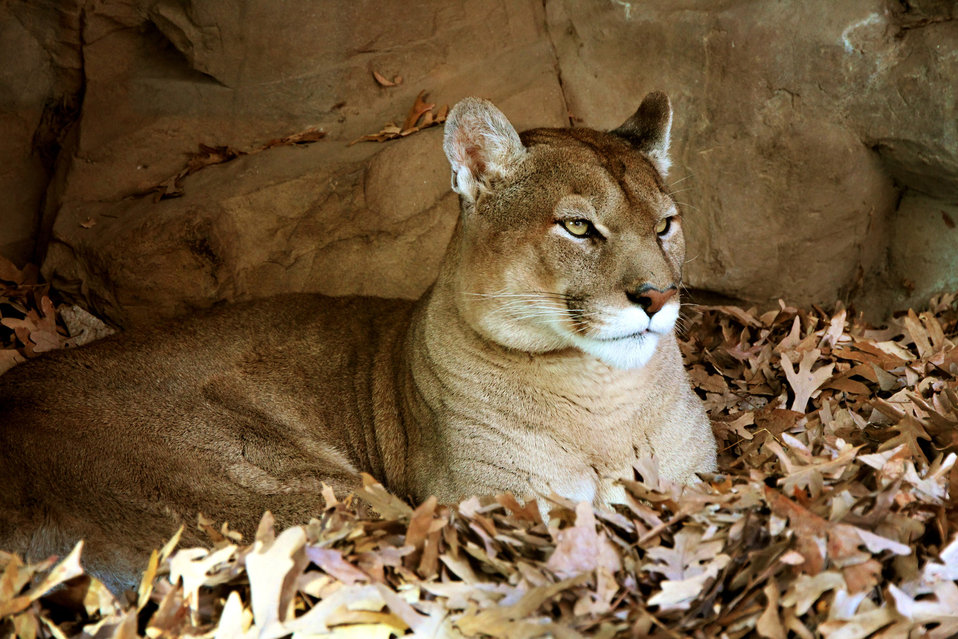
Mountain lion lying happily in a pile of leaves..